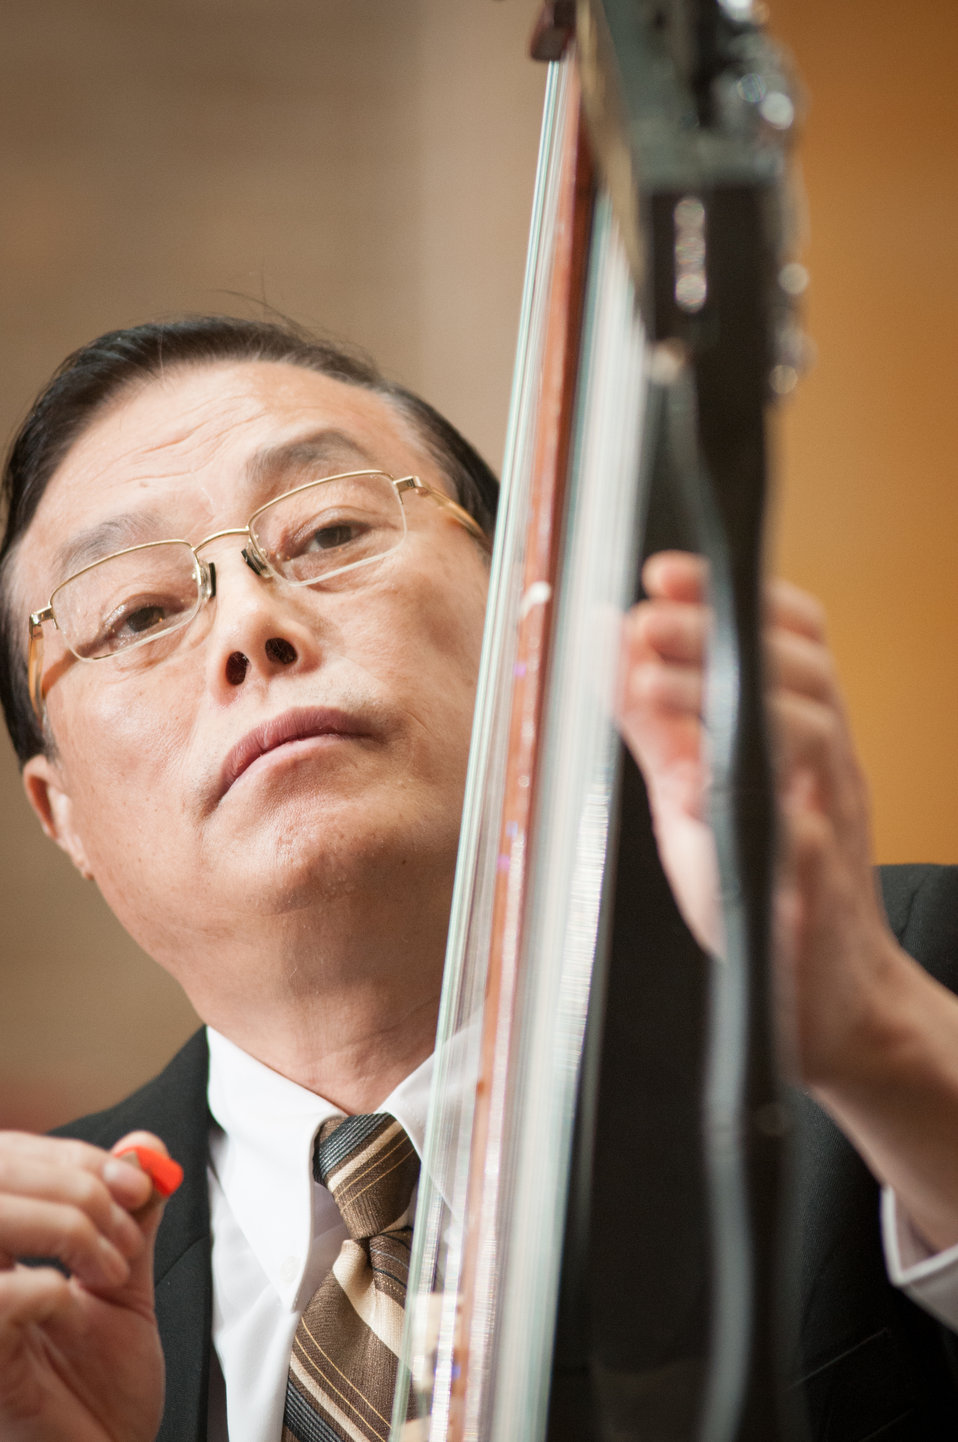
Washington Chinese Traditional Orchestra’s Mr. Wen gave a solo performance of “Fisherman Singing at Dusk” using an electric string instrument he invented that allows him to strum, pluck or bow using the three sets of strings on the one instrument, during the U.S. Department of Agriculture (USDA) Asian Pacific American Heritage Month Observance, at the USDA headquarters, Whitten Building patio, in Washington, D.C., on Thursday, May 23, 2013. This year’s theme is “Building leadership; Embracing the Cultural Values and Inclusions.”